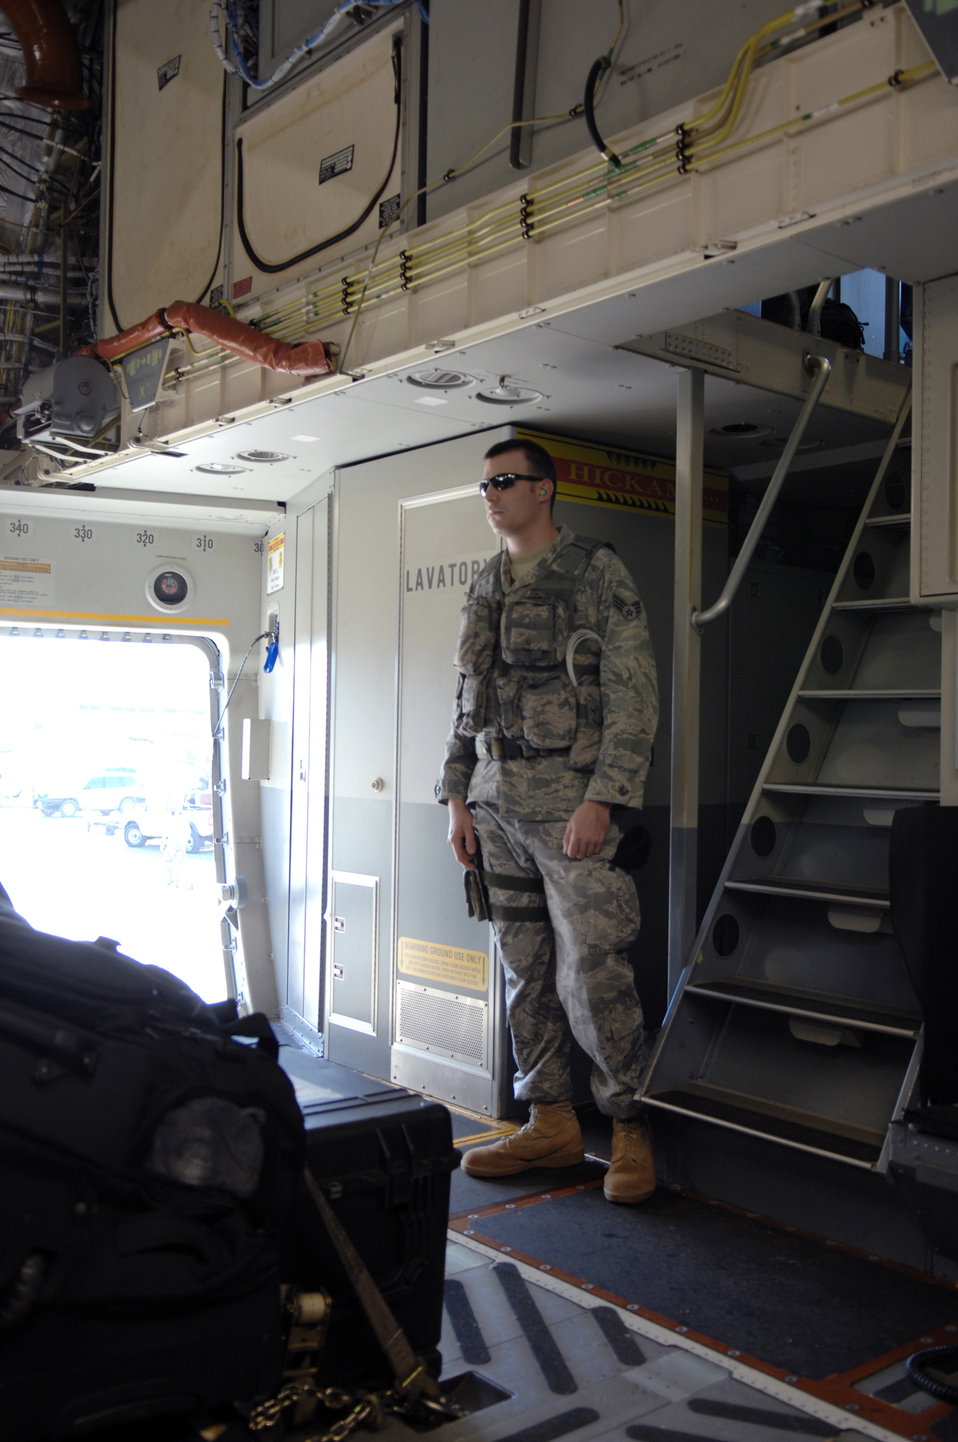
Pope members support Operation Unified Response

Senior Airman John Wade provides security for the flight deck of a C-17 Globemaster III en route to Orlando, Fla., Jan. 21, 2010. Airman Wade is a 62nd Security Forces Squadron Raven augmentee from McChord Air Force Base, Wa., but is supporting operations at Pope AFB, N.C.